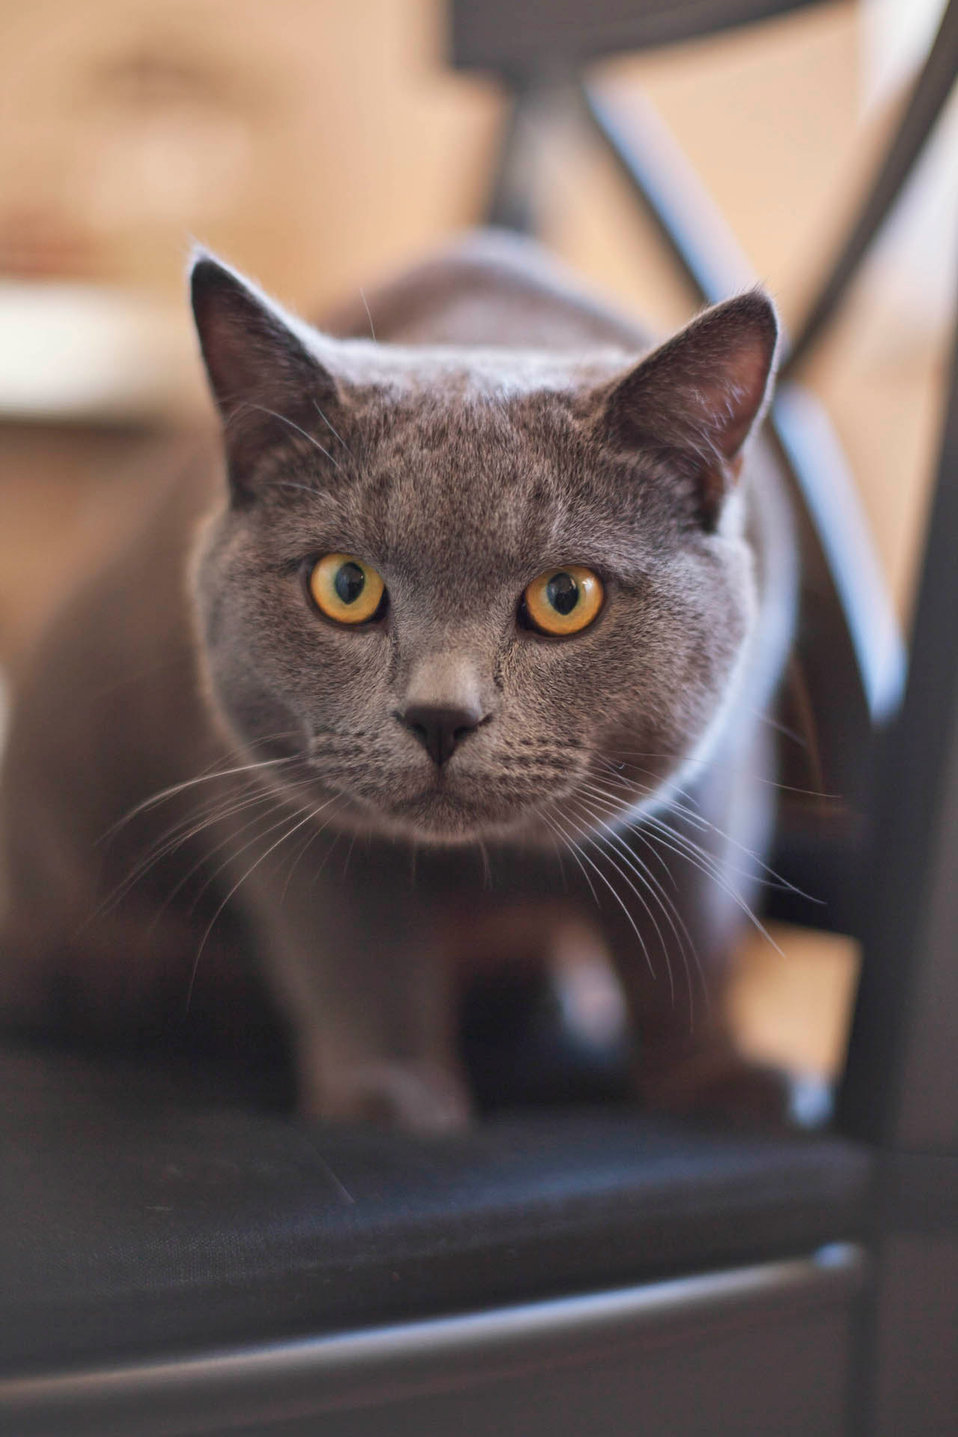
Cat with yellow eyes.